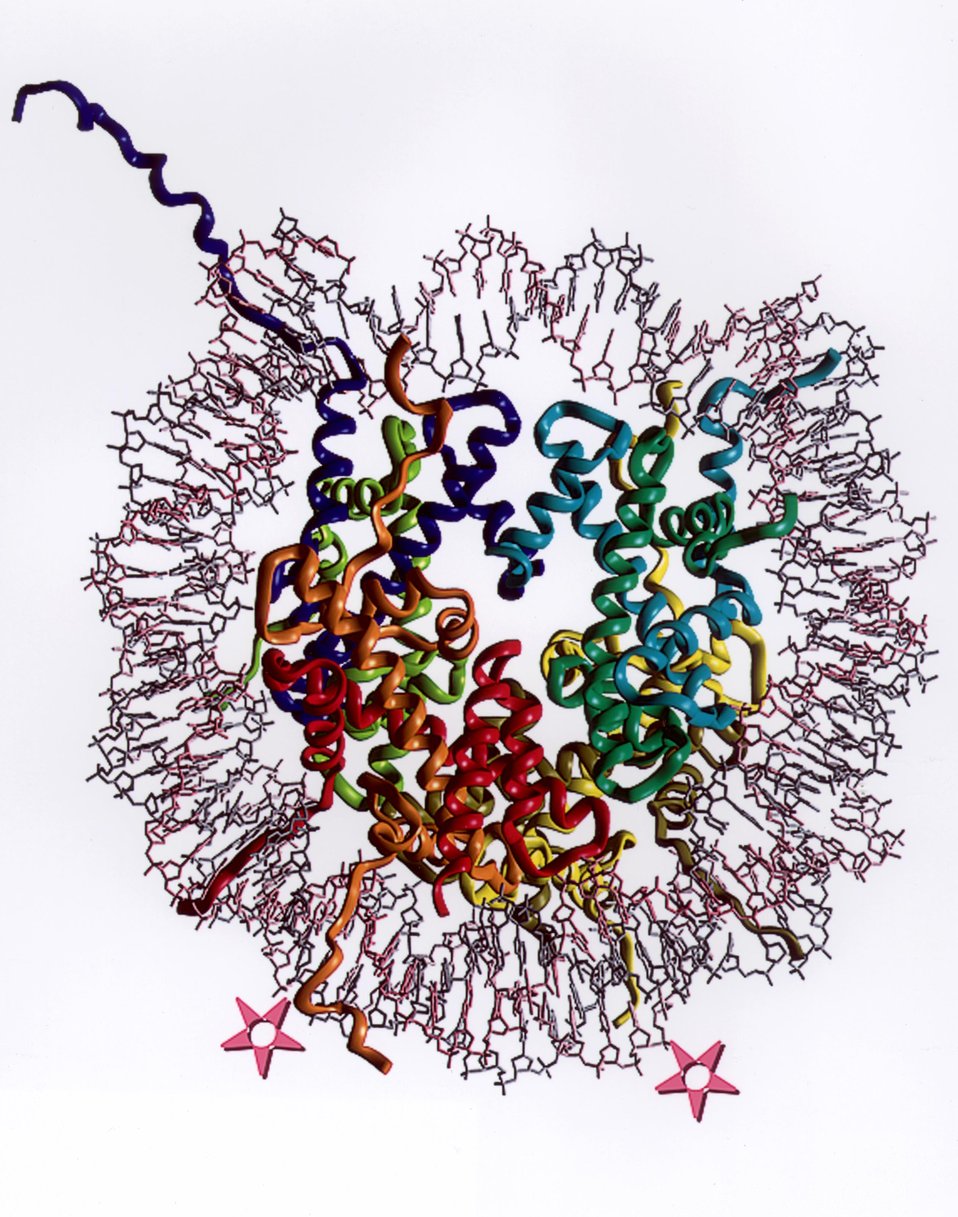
BASIC STRUCTURAL UNIT THAT ORGANIZES DNA IN CELLS.

SCIENTISTS AT PNNL STUDY THE BASIC STRUCTURAL UNIT THAT ORGANIZES DNA IN CELLS. THIS PROVIDES NEW INSIGHTS INTO HOW CELLS REGULATE WHEN THEY DIVIDE.